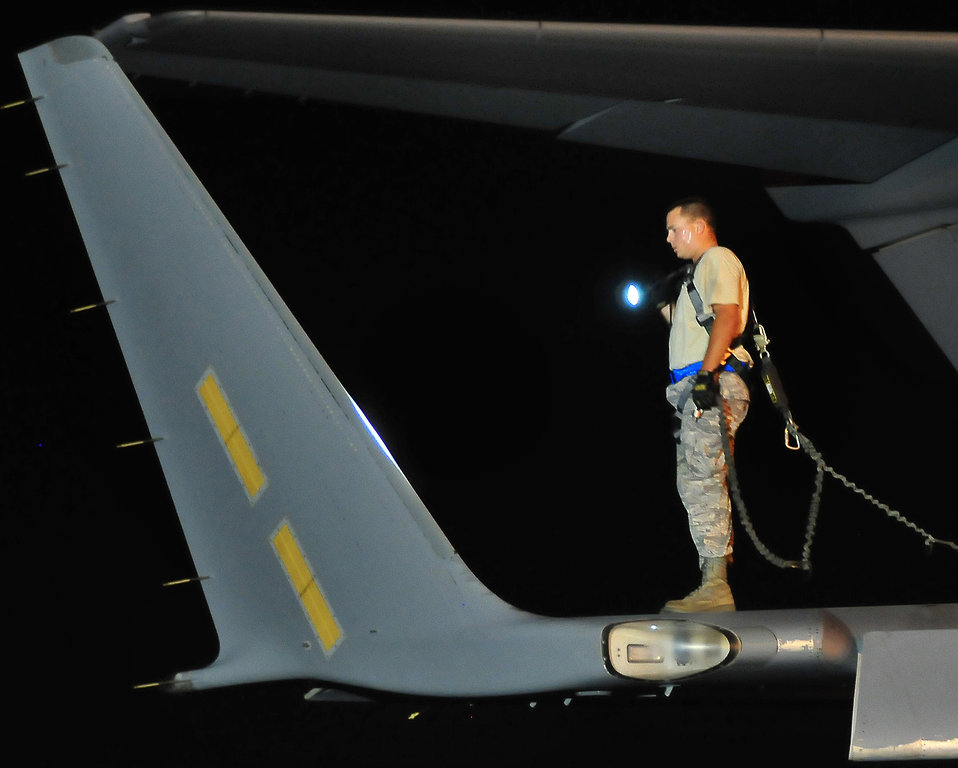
Checking it out

Staff Sgt. Dustin Clark performs a pre-flight inspection at the tip of the right wing of a C-17 Globemaster III Aug. 27, 2009, on the flightline at Charleston Air Force Base, S.C. Sergeant Clark is a crew chief with the Air Force Reserve Command's 315th Aircraft Maintenance Squadron.